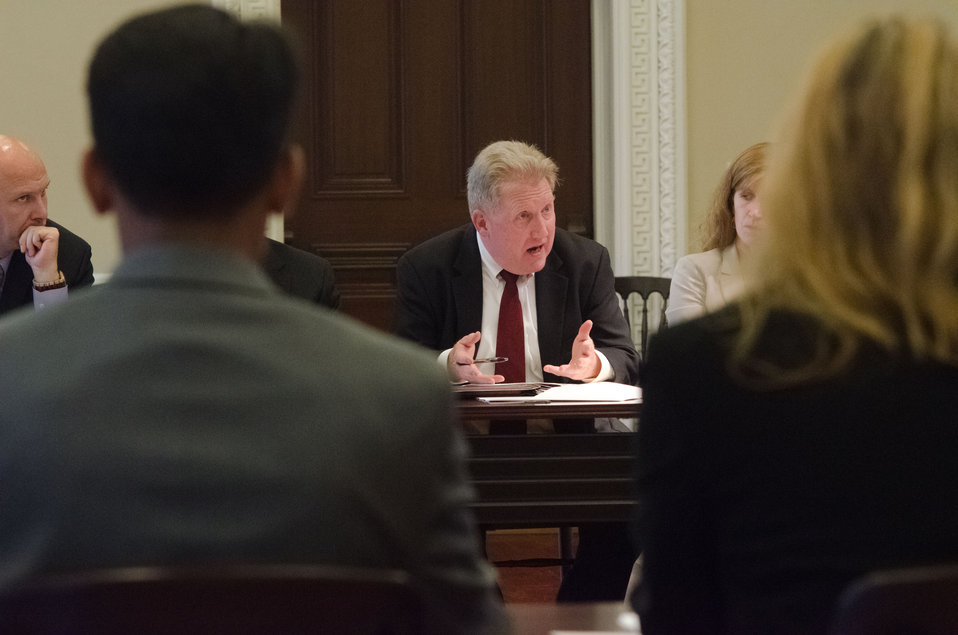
Environmental Protection Agency Chief Agricultural Counselor Larry Elworth speaks during the White House Rural Council chaired by Agriculture Secretary Tom Vilsack at the White House in Washington, D.C. on Friday, Oct. 5, 2012. The White House Rural Council discusses recent White House announcements and Secretary Vilsack asked council members to outline their work plan for the coming months.